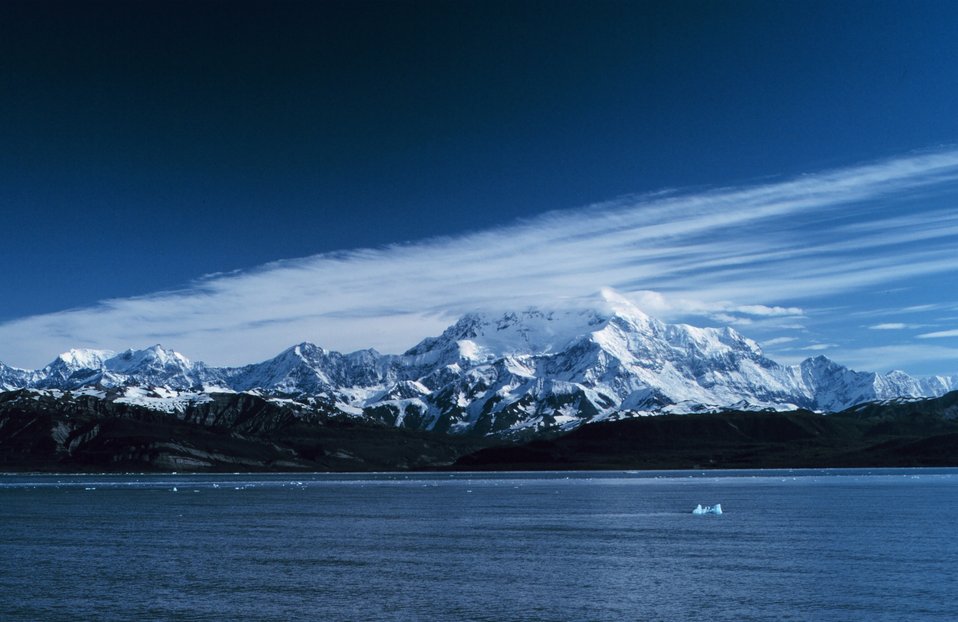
Photo #18 of Mount St. Elias sequence.